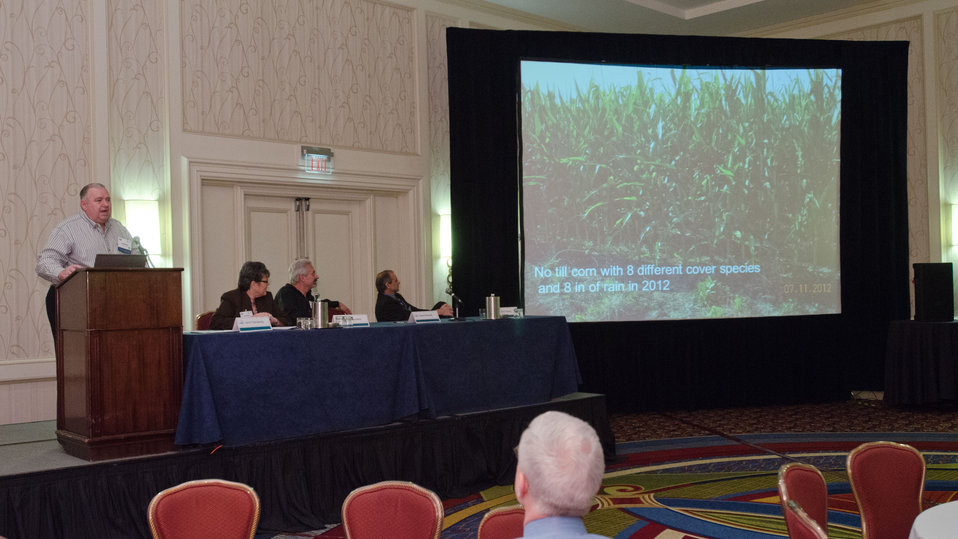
Brandt Farms Conservation Farmer David Brandt, of Carroll, OH speaks about the business benefits of no-till soil nutrient management, and shows a photo of himself with the type of radish plant he uses to naturally till his fields at least 15' deep, during the U.S. Department of Agriculture (USDA) 2013 Agricultural Outlook Forum, held at the Crystal Gateway Marriott Hotel in Arlington, VA on Friday, Feb. 22, 2013. Agriculture Secretary Thomas Vilsack mentions, in his opening address how Mr. Brandt’s multi-cropping/double-cropping practices have increased soil matter, saving about $100 per acre in nitrogen, increased corn yield by 7-10 bushels per acre, and soybean yield 8 percent. This exemplified what Secretary Vilsack said is a possible strategy for managing risk. This breakout session focused on Reducing Risks by Improving Soil Health, examined the indicators of soil health, to reduce chemical inputs and apply the right techniques for sustainable production and other benefits. Soil health is defined as the capacity of the soil to function as a living ecosystem that sustains plant, animal, and human health with limited human intervention.